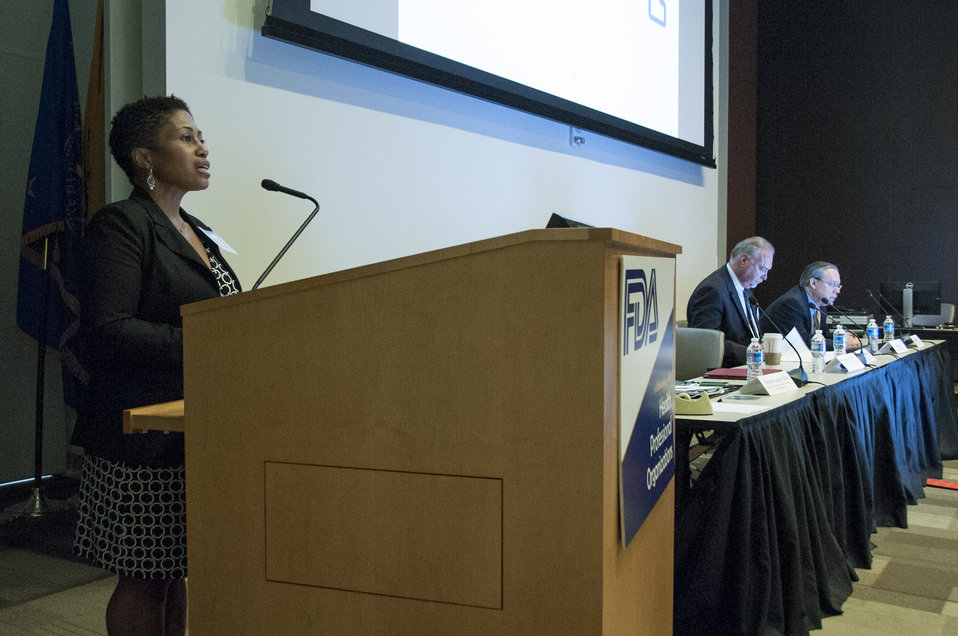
FDA's 2014 Health Professional Organizations Conference (1078)

May 14, 2014; At podium: Michelle McMurry-Heath, MD, PhD, Associate Director for Science, in FDA's Center for Devices and Radiological Health (CDRH). At FDA's third annual Health Professional Organizations Conference, some of FDA’s most senior leaders exchanged views and discussed issues of mutual interest with senior representatives from key health professional organizations. To learn more, go to FDA Voice.

This photo is free of all copyright restrictions and available for use and redistribution without permission. Credit to the U.S. Food and Drug Administration is appreciated but not required.

Privacy and use information: www.flickr.com/people/fdaphotos/